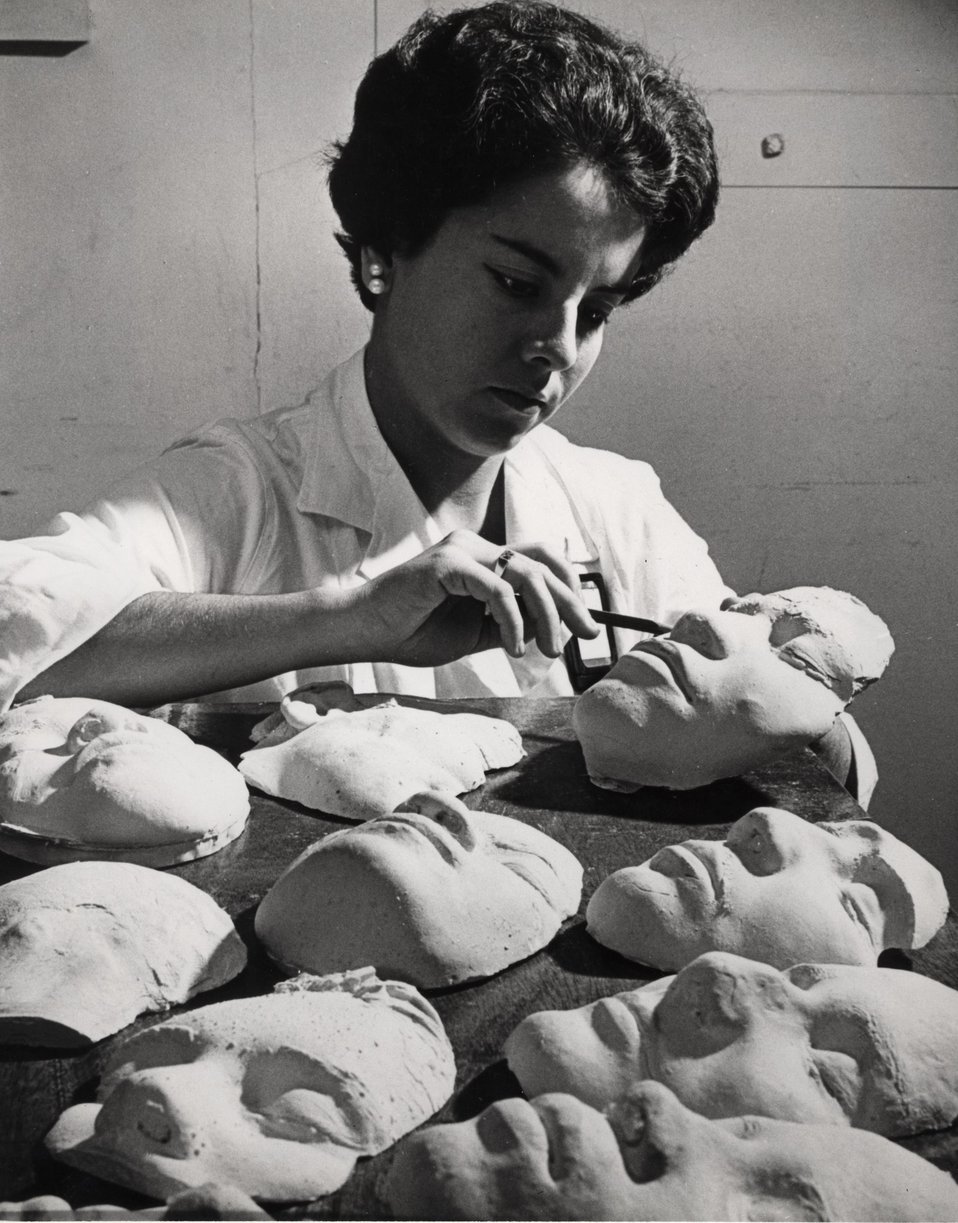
A staff assistant inspects newly made masks of patients undergoing treatment at the Puerto Rico Radiotherapy and Cancer Division of the Puerto Rico Nuclear Center. Circa 1969.